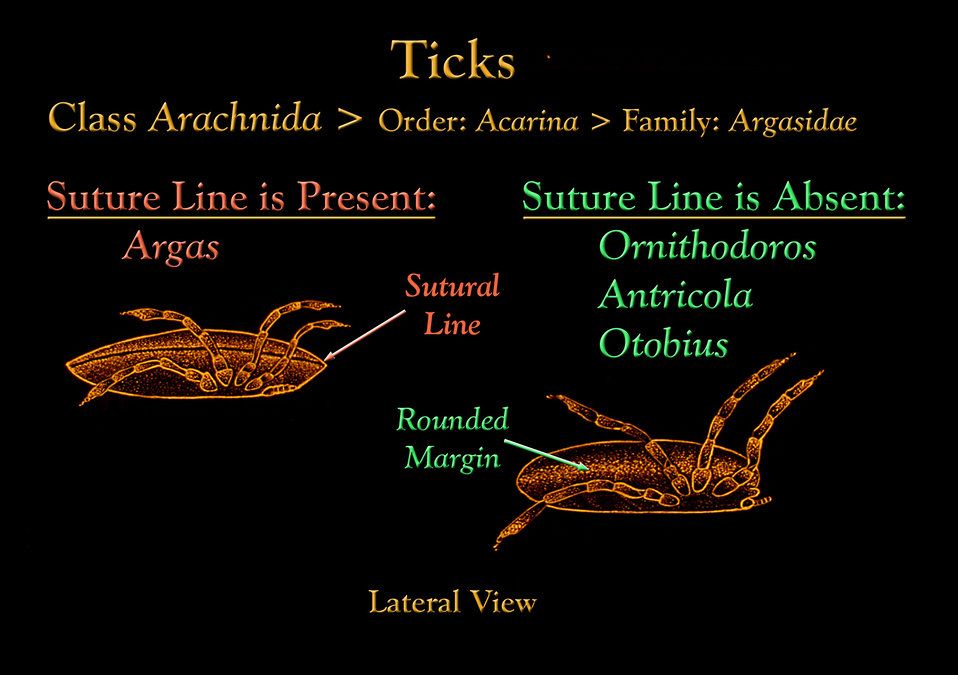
This illustration depicts two Argasidae soft ticks from a lateral view; one with, and one without a definite suture line.